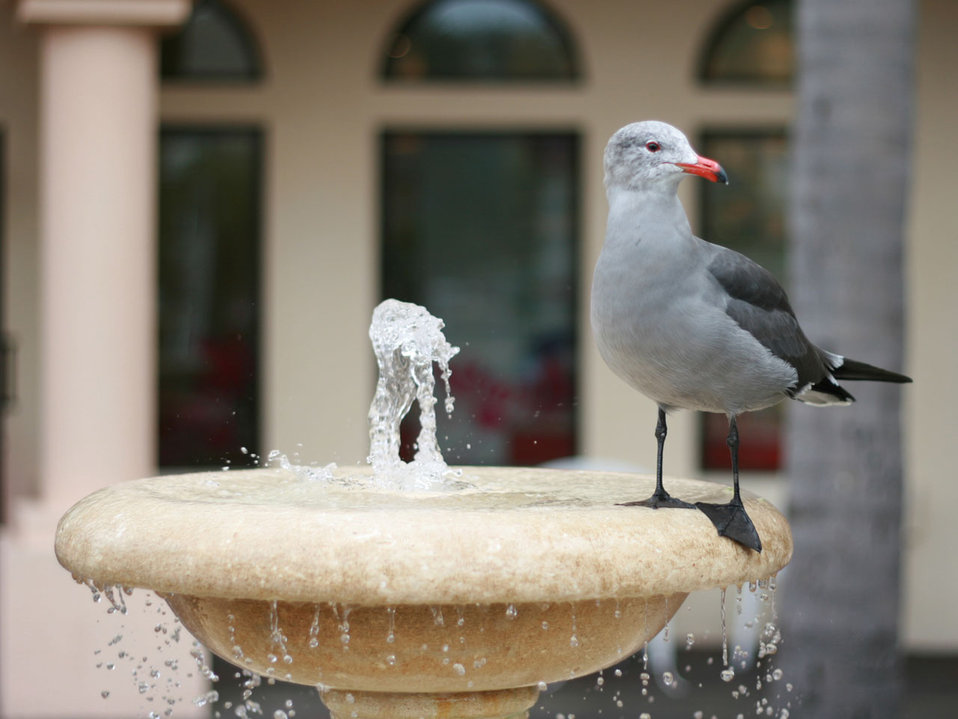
Seagull

Shot on main street in huntington beach, ca.